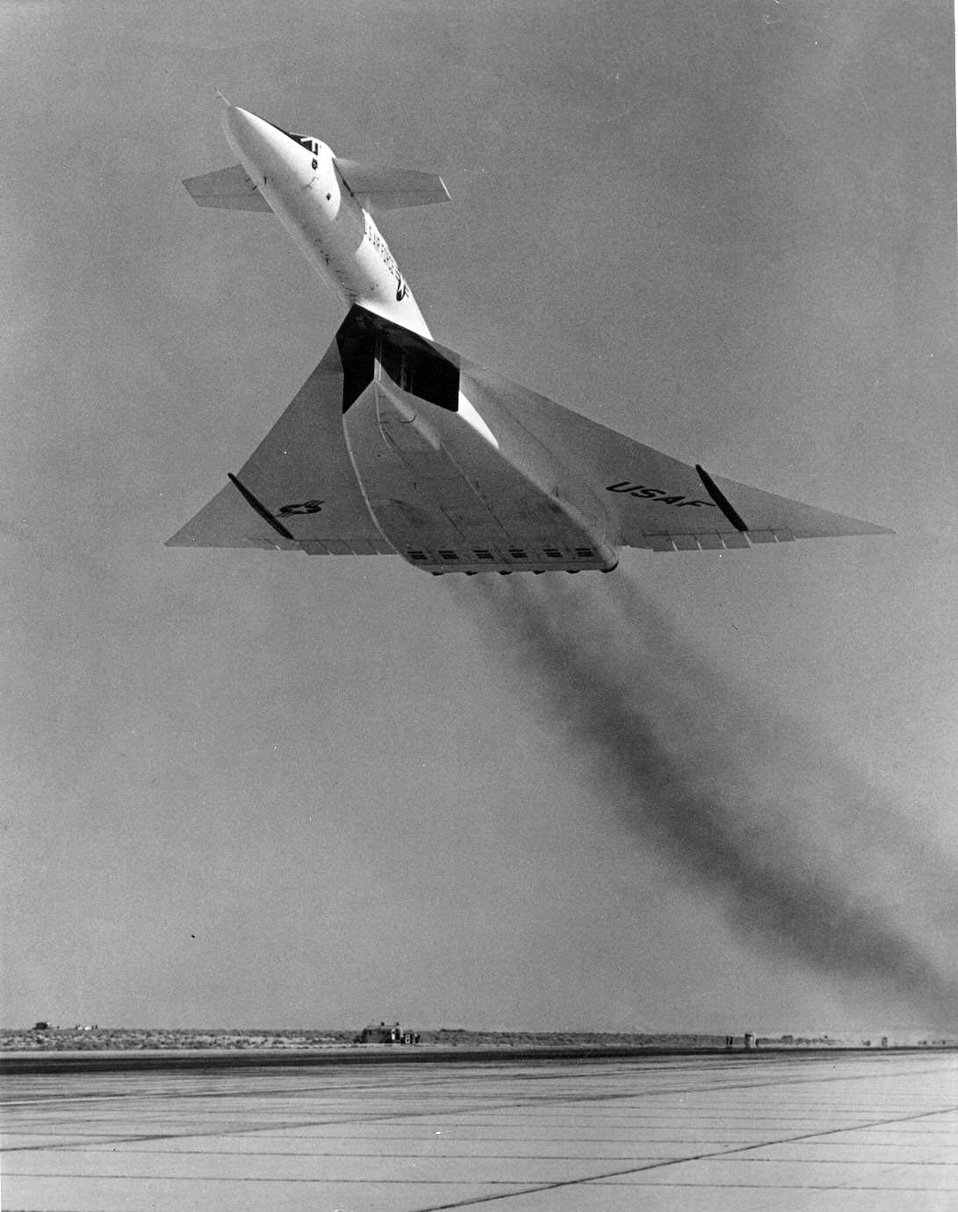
XB-70A Valkyrie from North American flies over the runway at Edwards Air Force Base, Calif. (landing gear up).